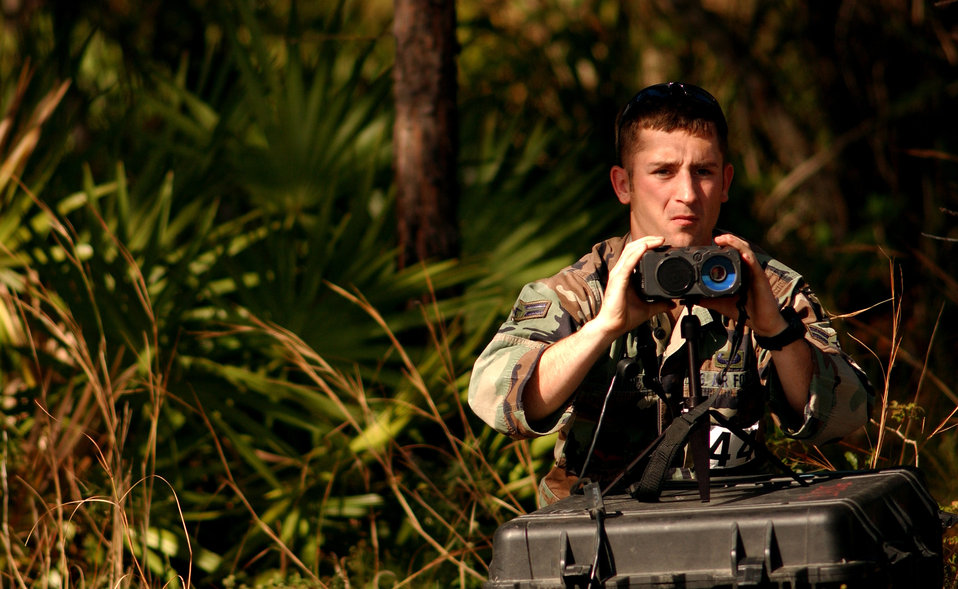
Dragon Challenge 04

AVON PARK, Fla. -- Airman 1st Class Burns uses his equipment to create a grid during the Dragon Challenge 04 obstacle course here Dec. 5. Airman Burns is a tactical air control party member from the 19th Air Support Operations Squadron at Fort Campbell, Ky.